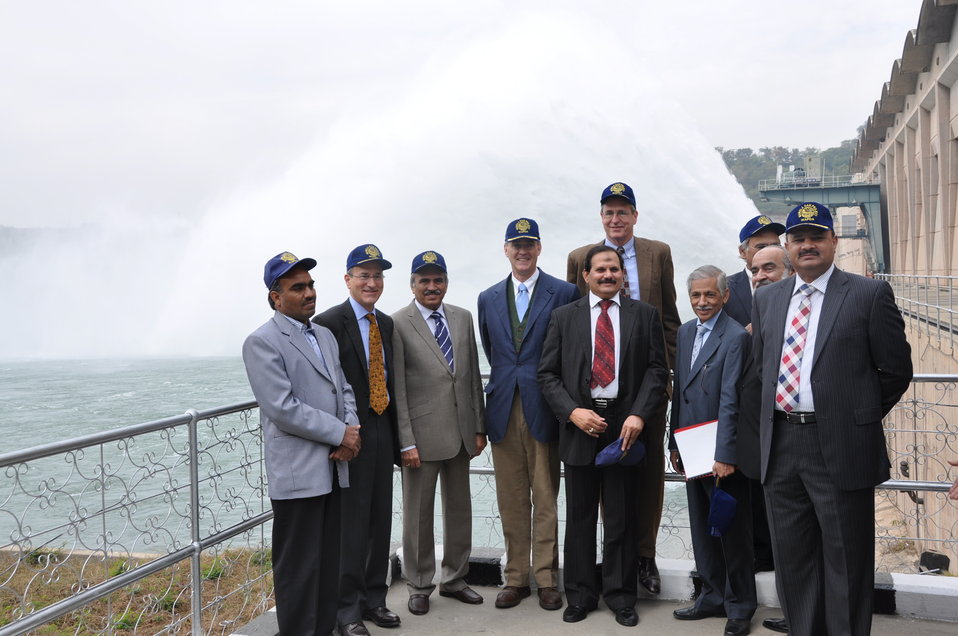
At the dam